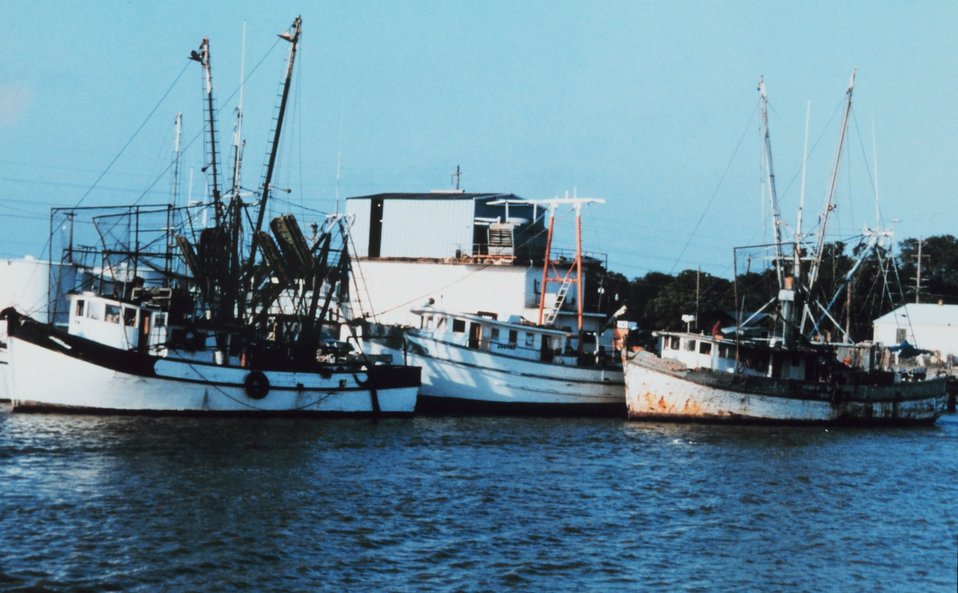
Shrimp boats at Cameron